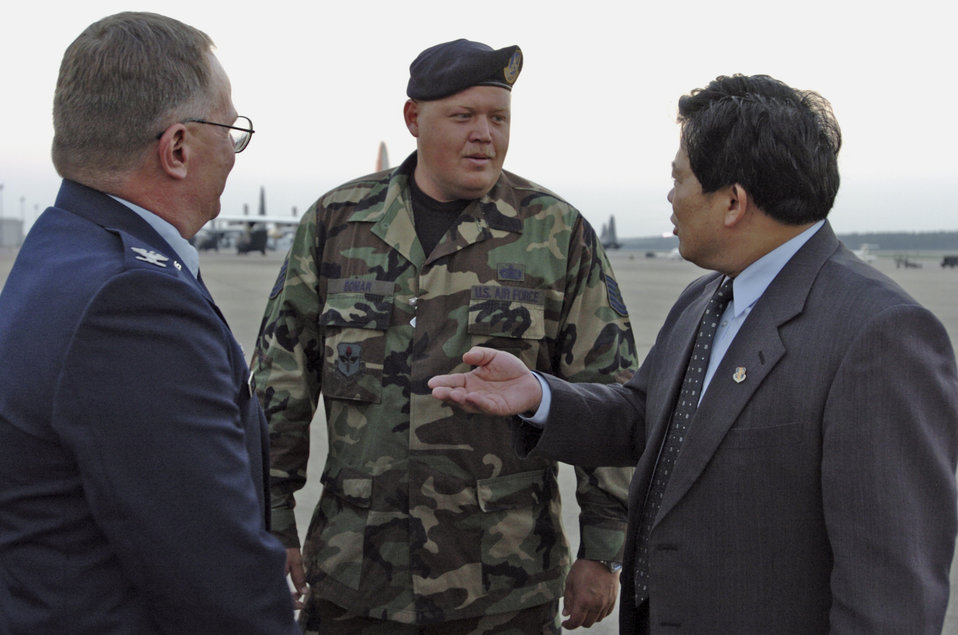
Little Rock welcomes China hurricane aid

LITTLE ROCK AIR FORCE BASE, Ark. -- Col. Jac Starkey (left) and Tech. Sgt. Daniel Bomar talk with Hu Yeshun after the arrival of a Chinese humanitarian aid shipment for Hurricane Katrina relief operations. It marked the 17th international aid flight to land here since Sept. 5, delivering a combined 934 tons of relief supplies. Colonel Starkey is commander of the 314th Mission Support Group, Sergeant Bomar is the kennel master for the 314th Security Forces Squadron, and Mr. Yeshun is consul general for the People's Republic of China.